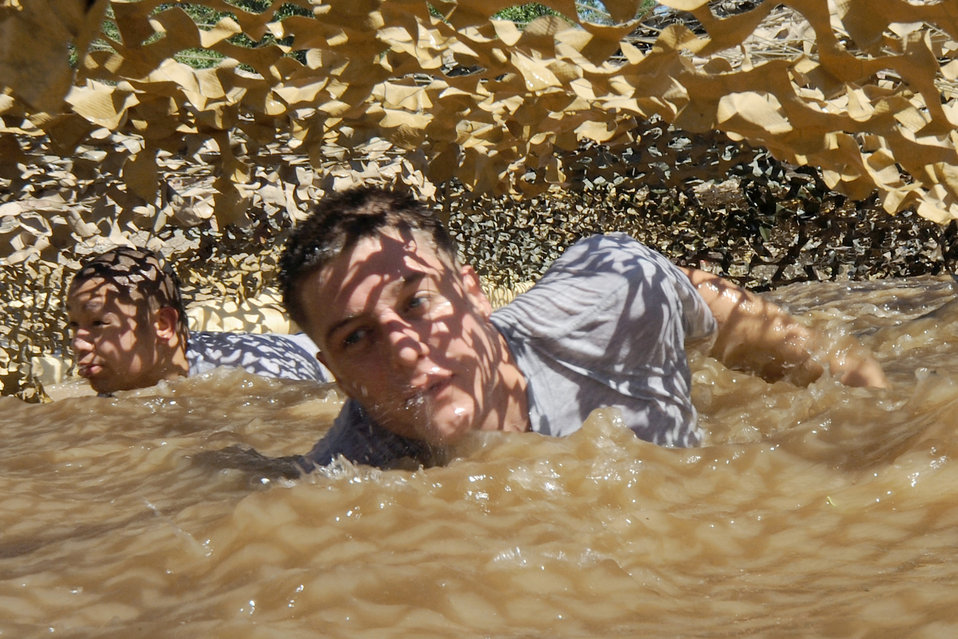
Kyrgystan 5K Mud Run

Airmen trudge through a mud pit during the 5K mud run at Transit Center at Manas, Kyrgyzstan, July 11, 2010. The run helped raise money for the Manas Area Benefit Outreach Society; a volunteer organization used to better the lives in the local community.